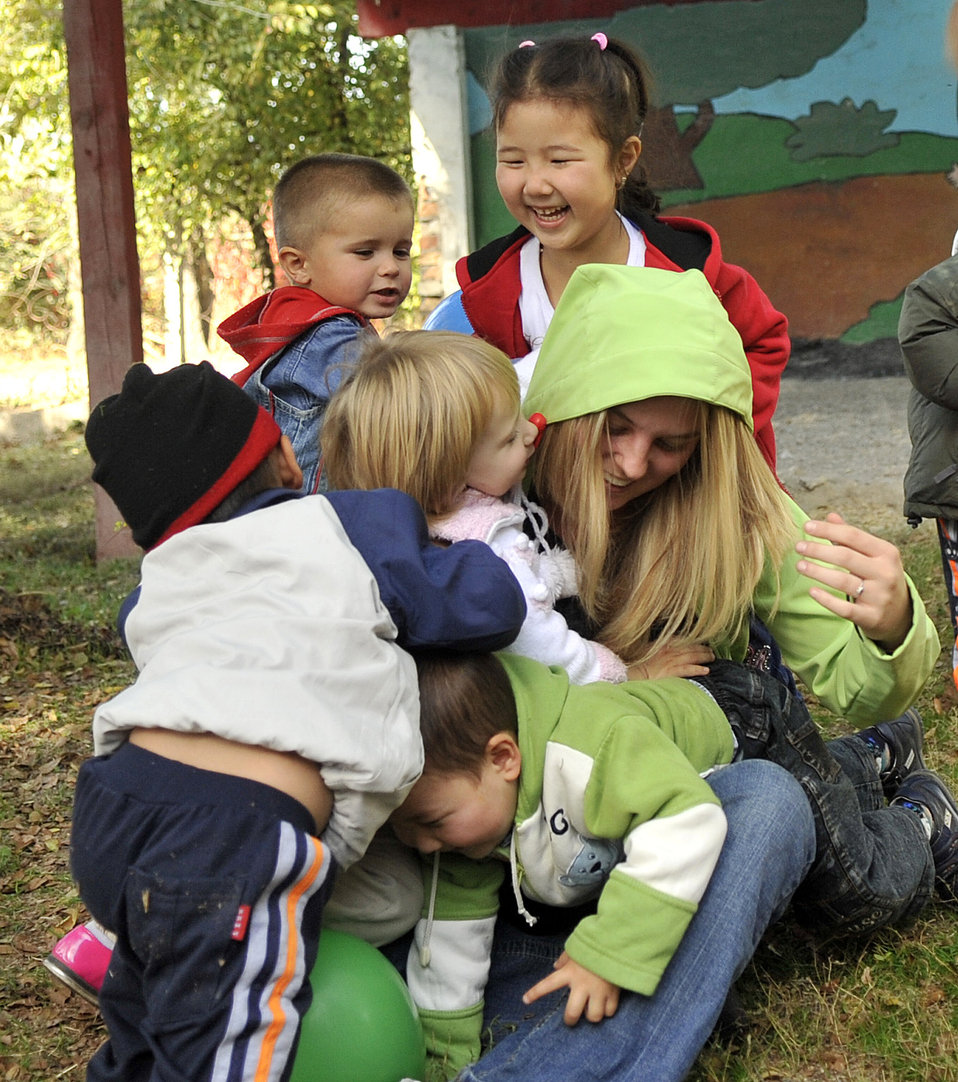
Kyrgyzstan school

Airman 1st Class Jessica Wilson plays with several kids Oct. 18, 2010, at the Solnyshko school near Vasilievka, Kyrgyzstan.